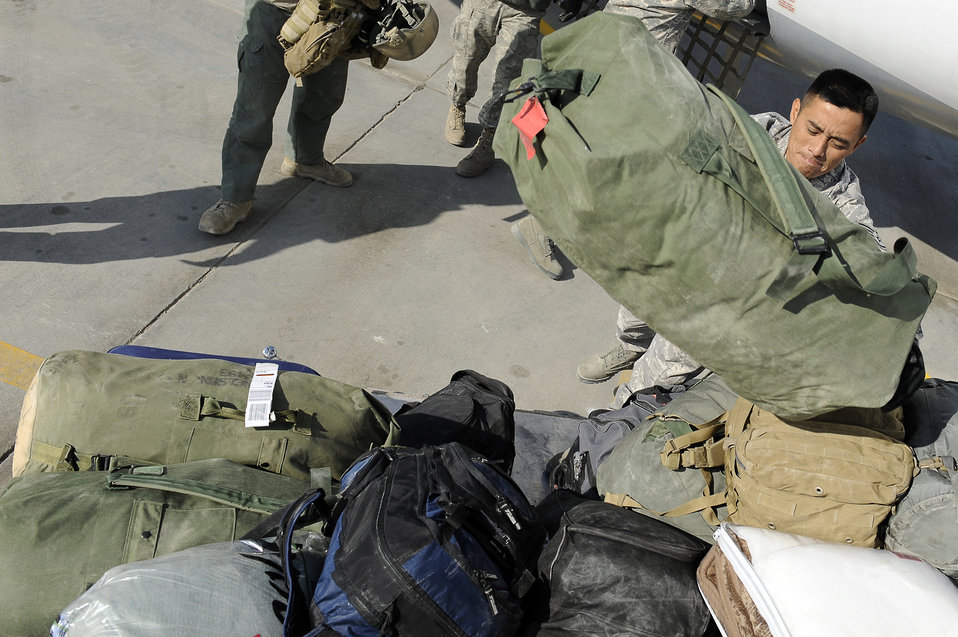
Moving the goods

Staff Sgt. Alex Santiago unloads an aircraft Jan.12, 2010 at Bagram Airfield, Afghanistan. Sergeant Santiago is assigned to the 455th Expeditionary Aerial Port Squadron.